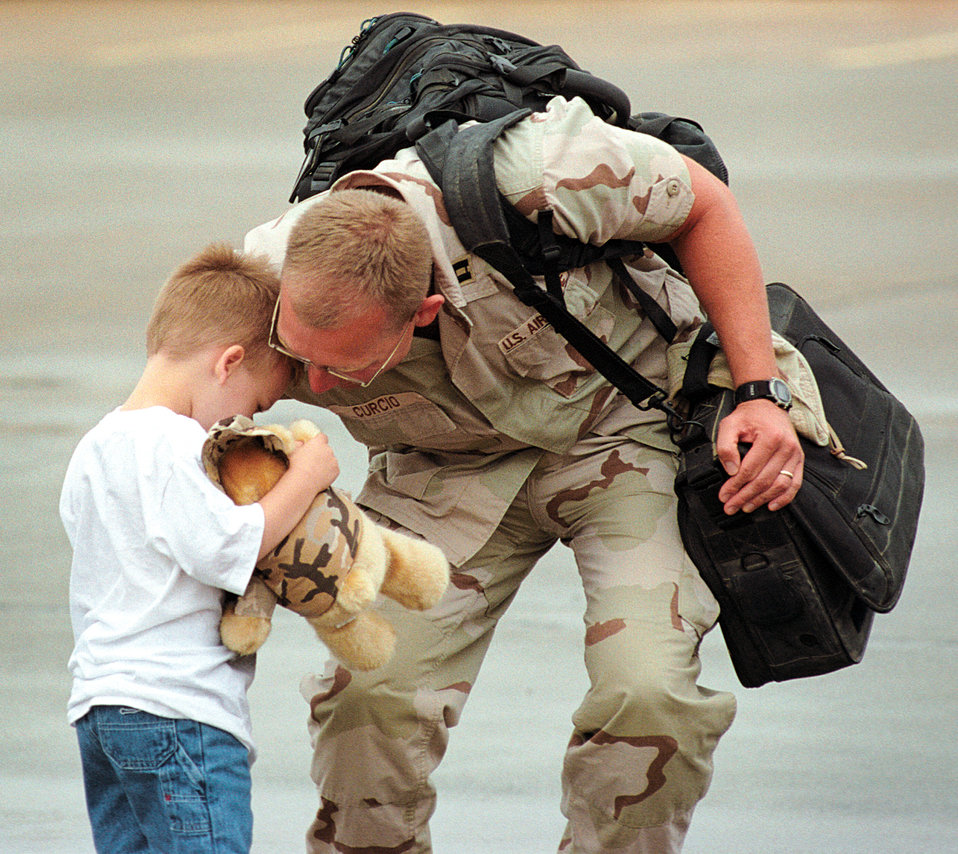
Let's go home

TINKER AIR FORCE BASE, Okla. -- Capt. Thor Curcio comforts his 4-year-old son, Gunnar, before the reunited family heads home June 5, 2003. Curcio deployed for five months with the 32nd Combat Communications Squadron.